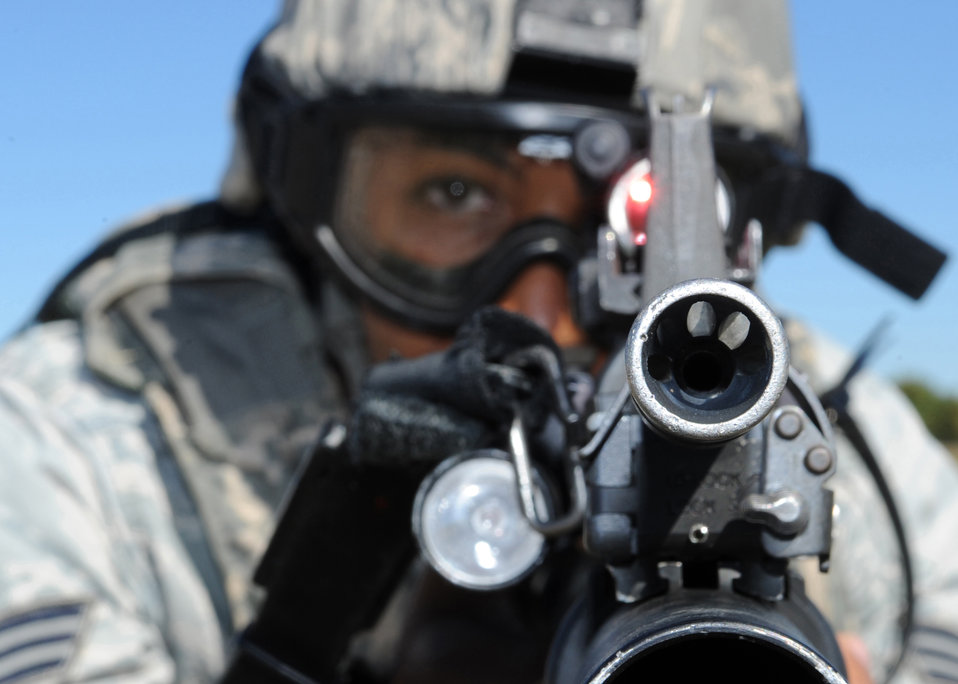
Barksdale Airmen prepare for Global Strike Challenge

Senior Airman Lazarus Wallace prepares to fire at the target during a training exercise for the Global Strike Challenge competition Nov. 4, 2010, at Barksdale Air Force Base, La. He is assigned to the 2nd Security Forces Squadron.